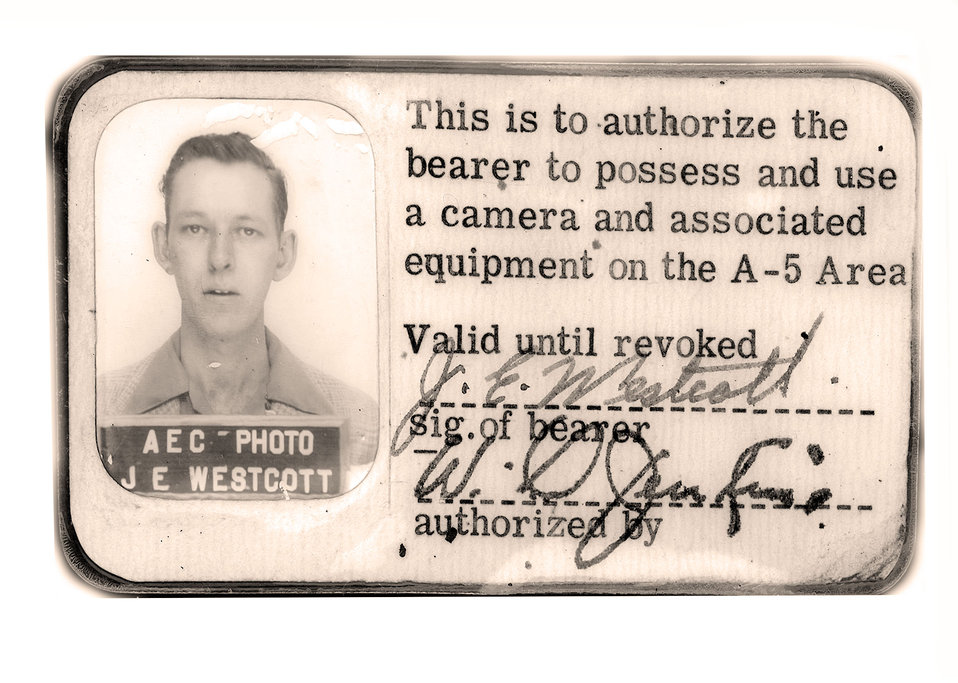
Ed Westcott's Camera Pass 1940s Oak Ridge